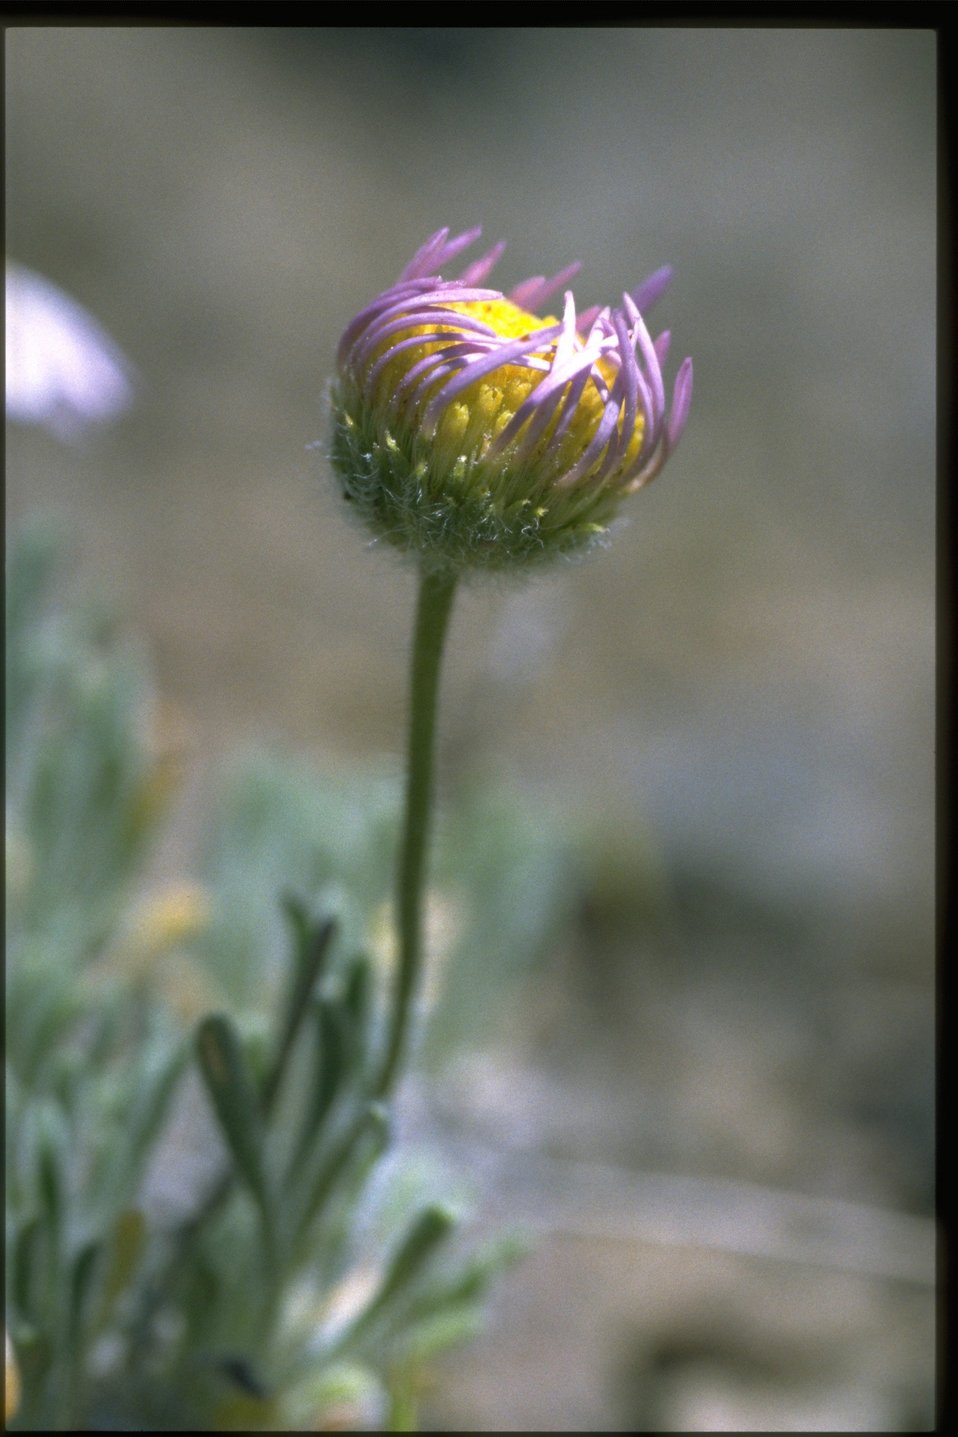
Closeup shot of purple cushion fleabane (Erigeron poliospermus var. poliospermus).